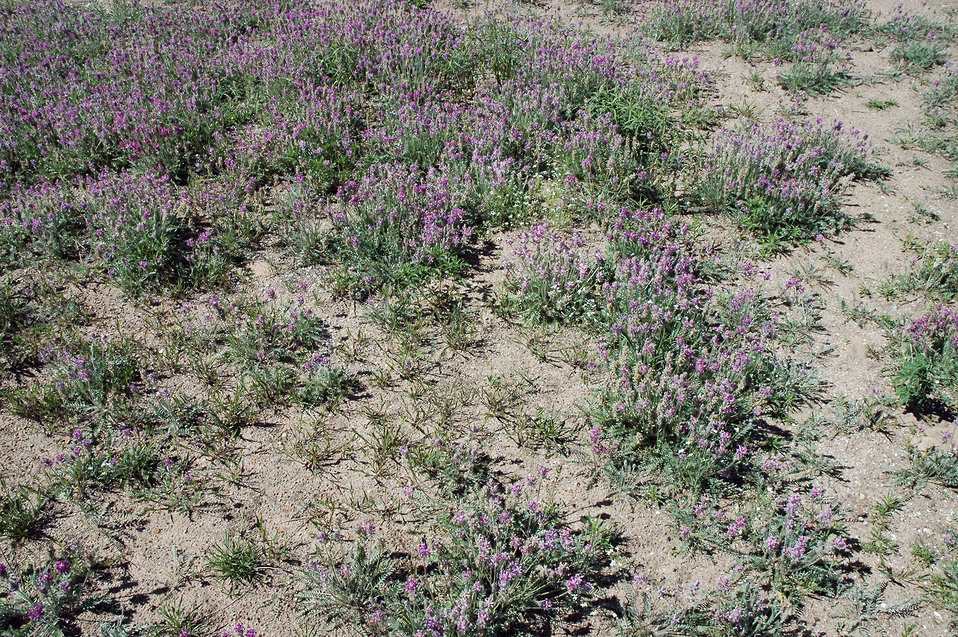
Fassetts Locoweed By USFWS Joel Trick

Fassett's locoweed growing along the shoreline of a Wisconsin lake. Fassett's locoweed is a threatened plant. Photo by USFWS; Joel Trick